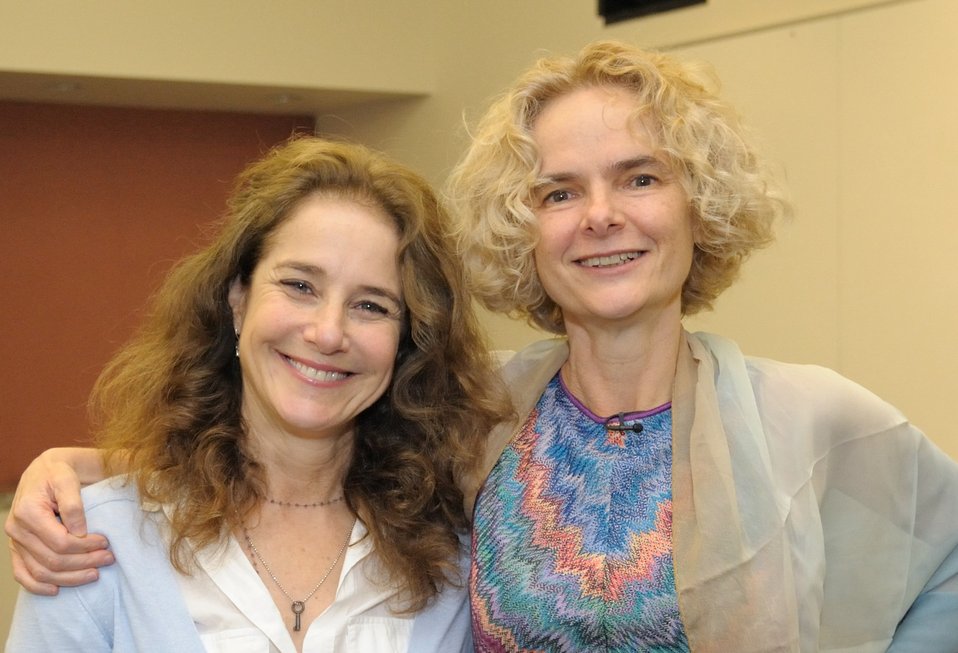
2-Winger and Volkow

Actress Debra Winger and NIDA Director Dr. Nora Volkow pose prior to NIDA’s Addiction Performance Project, held Aug 5, 2011 on the NIH Campus